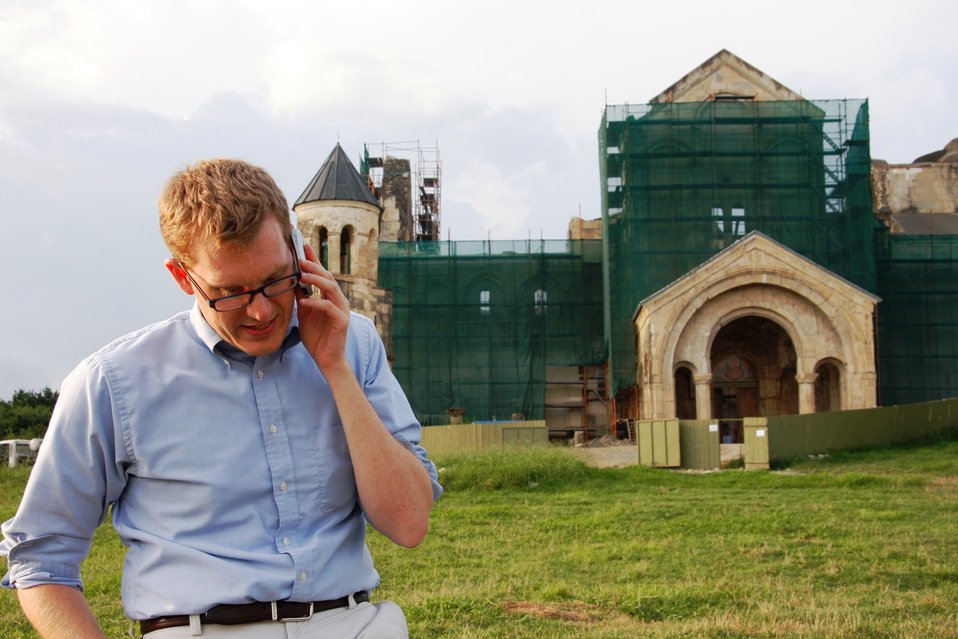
PAS Summer Intern Meyer Fields a Call

Public Affairs Specialist Summer Intern Jarrod Meyer fields a call from the office during a site visit in Kutaisi, Georgia, the city in which he served as a former Peace Corps volunteer three years ago, on July 22, 2010.